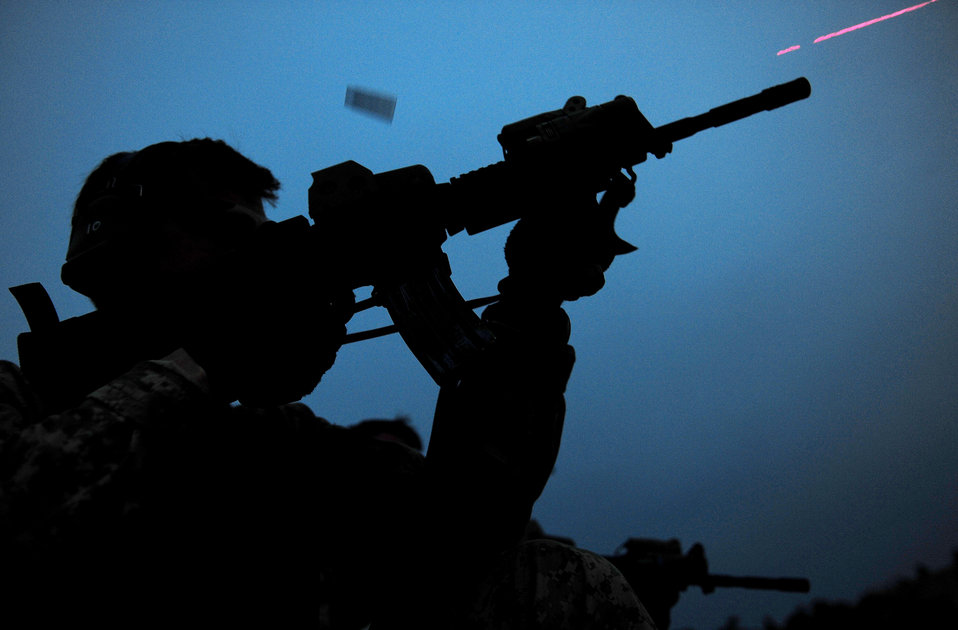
One, two, three, FIRE

U.S. military servicemembers train in preparation for Exercise Emerald Warrior 10 at Fort Walton Beach, Fla., March 7, 2010. The training is a U.S. Special Operations Command-sponsored mission rehearsal exercise involving multi-service participants. The exercise was conducted throughout the Southeast.